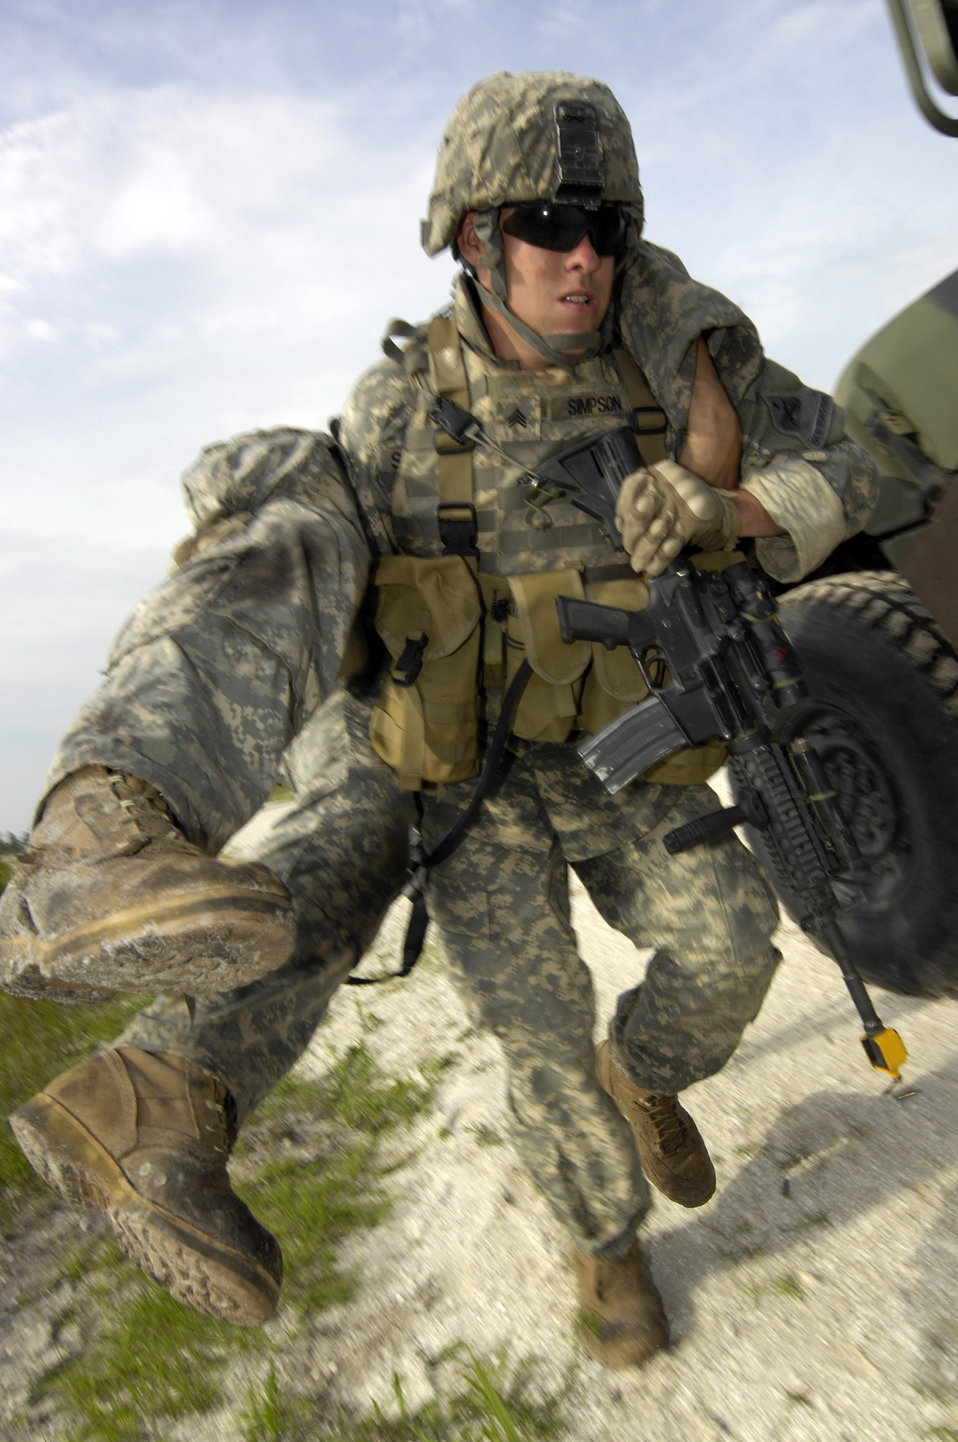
Atlantic Strike VII

An Army Soldier from the 4th Brigade Combat Team, 1st Armored Division, carries a wounded Soldier to safety during Atlantic Strike VII June 16 at Avon Park Air Ground Training Complex at Avon Park, Fla. Atlantic Strike is a joint-forces training event involving joint terminal attack controllers from the Army, Air Force and Marines held semi-annually.